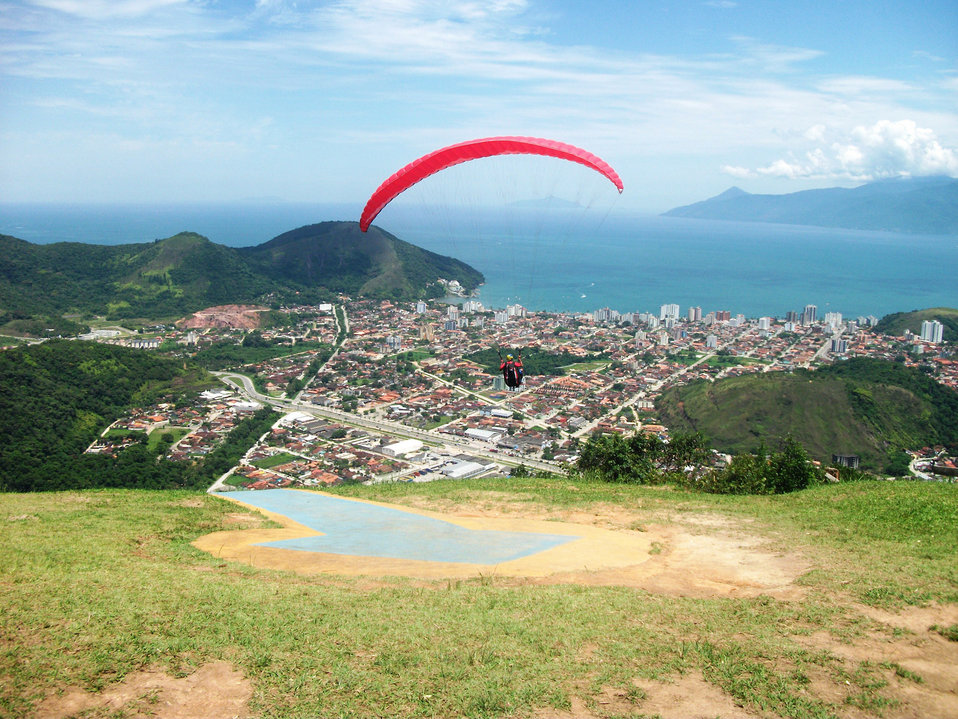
Takeoff

Paragliding takeoff - delta san antonio hill - caraguatatuba-sp.